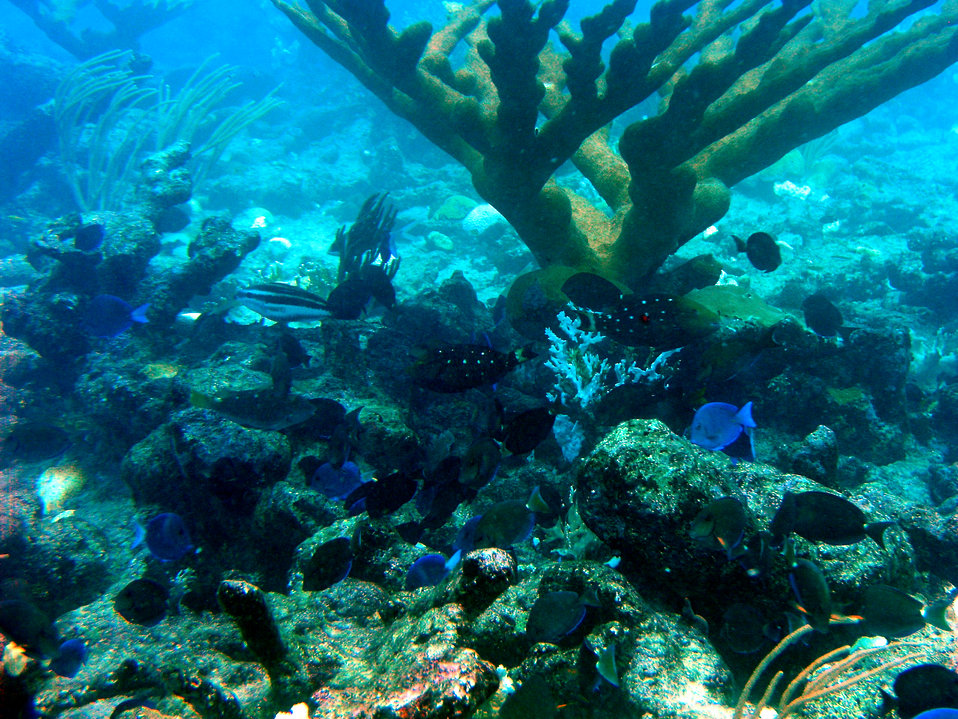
Reef scene